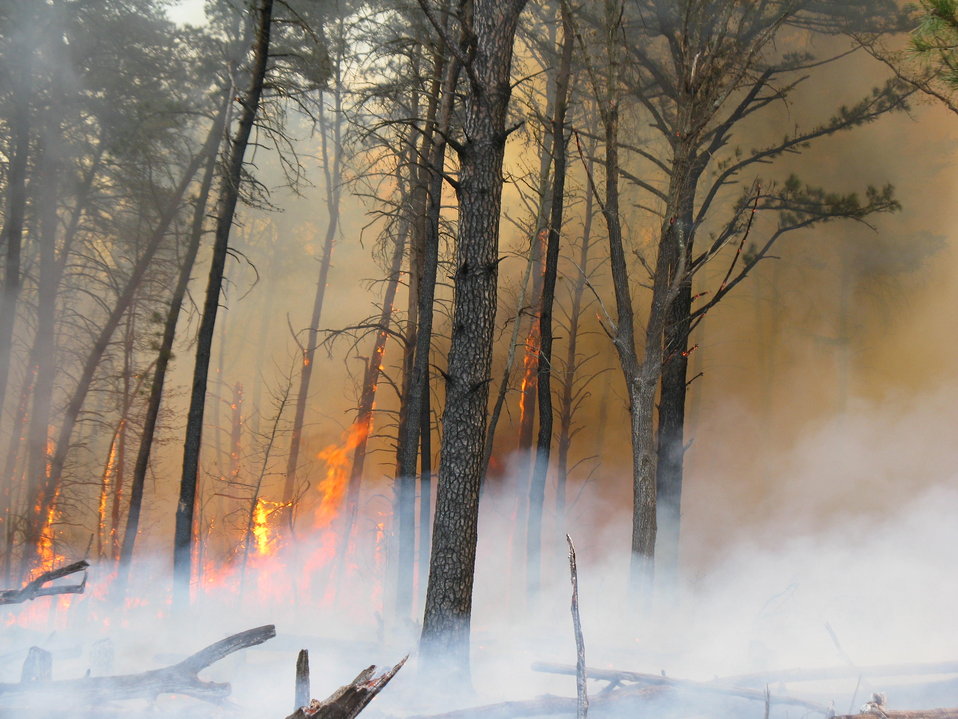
Savannah Restoration

Laurel, Maryland, April 5, 2012: Fire consumes small Virginia pines in the understory to create open conditions under a mature oak/pine forest. The burn was done at Patuxent Research Refuge's Savannah Restoration Unit to increase refuge species and habitat diversity. Specifically, the refuge hoped to increase density and diversity of rare darkling beetles and forest floor plants.